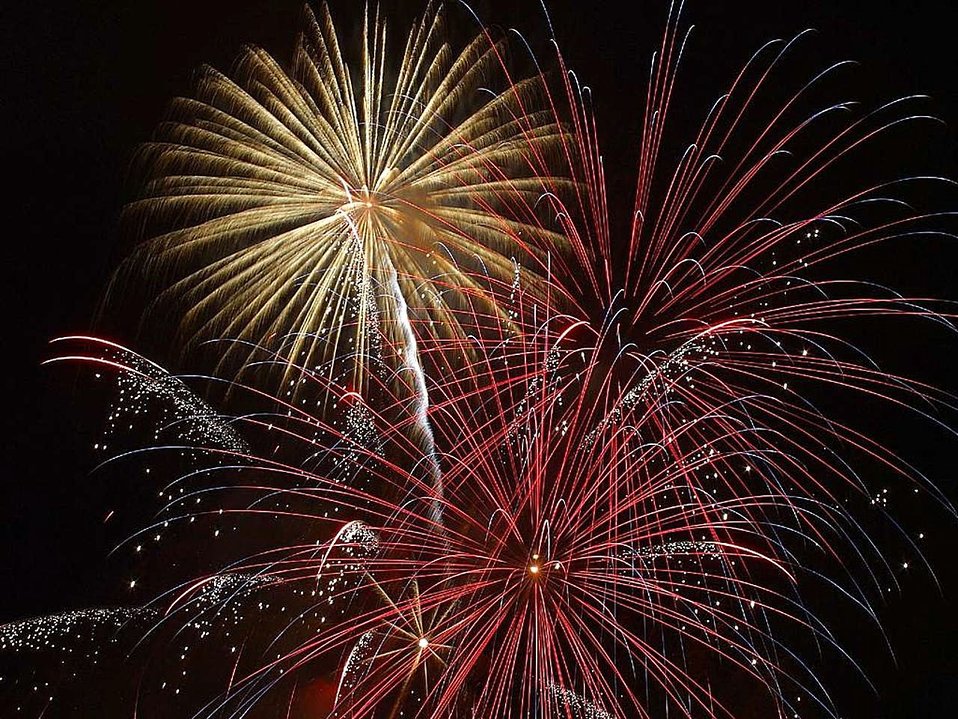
English:
Image title: Beautiful sky with fireworks Image from Public domain images website, http://www.public-domain-image.com/full-image/miscellaneous-public-domain-images-pictures/fireworks-public-domain-images-pictures/beautiful-sky-with-fireworks.jpg.html